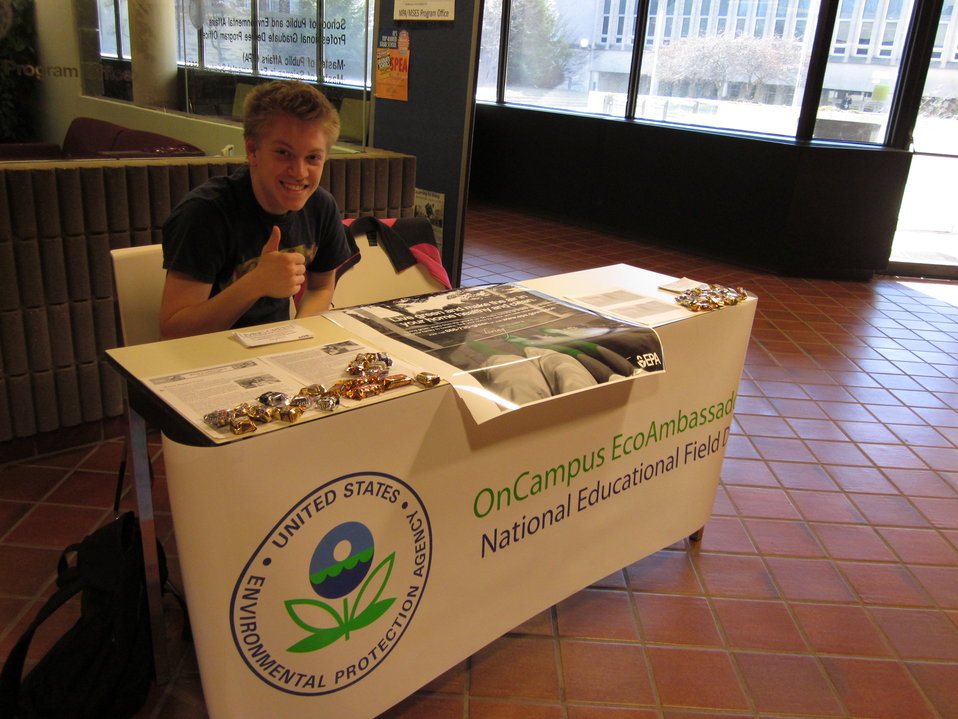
February, 2011 Indiana University ecoAmbassador spreads the word on radon awareness

Indiana University's ecoAmbassador chose to spread the word and educate others about radon safety.

Get involved!